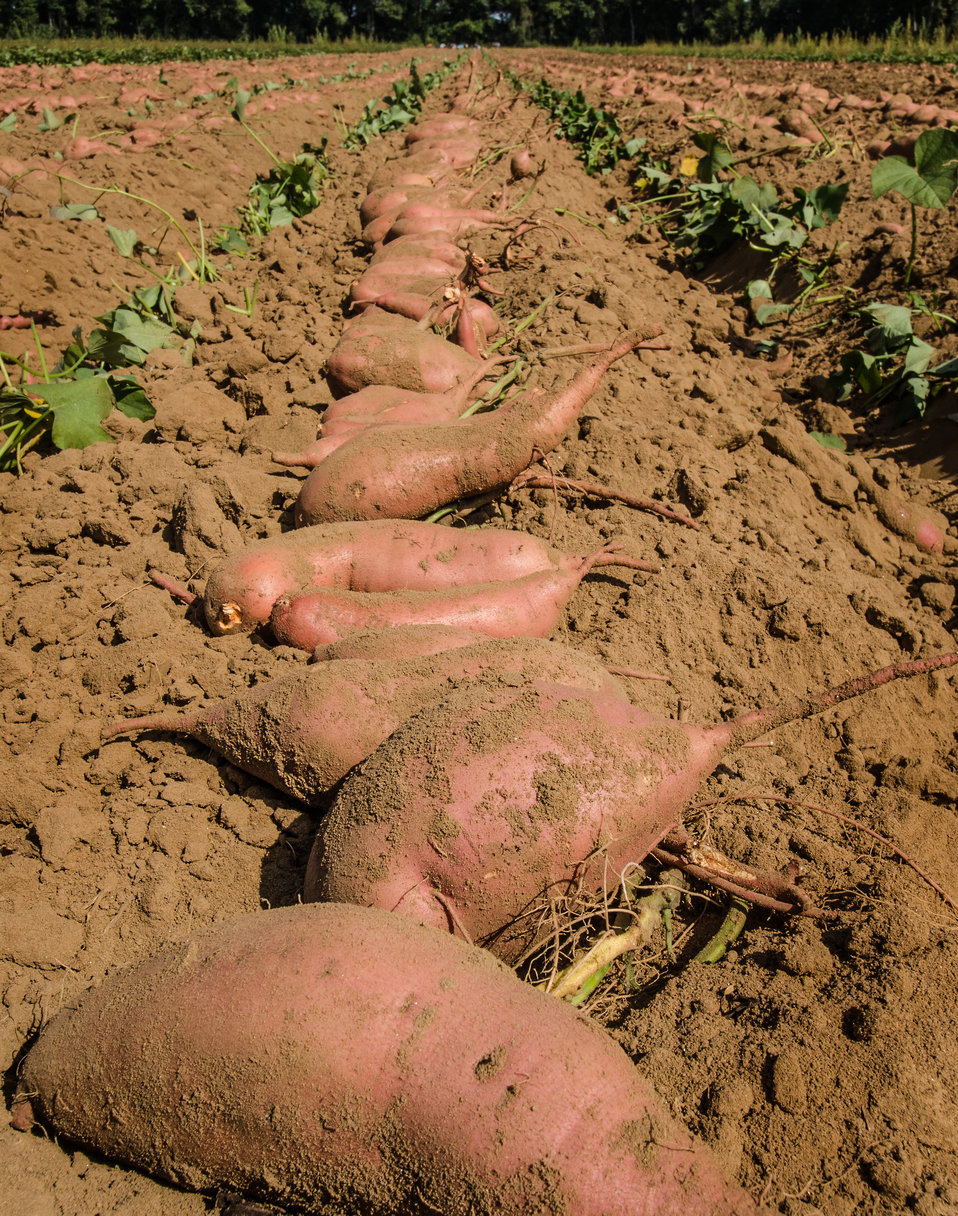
Harvested hand picked large sweet potatoes, at Kirby Farms in Mechanicsville, VA on Friday, Sept. 20, 2013. 200 acres of the farm are devoted to eggplant, spinach, beets, tomato, jalapeno peppers, melons and a variety of greens. Soybeans and small grain are grown on the remaining 300 acres. Using rotational crop practices allows Kirby Farms to double and triple crop yields. Wholesalers, who buy from this farm, sell the produce to major supermarkets in the Mid-Atlantic region, from North Carolina to Maryland. Restaurants in the local area prepare and serve the local bought produce to patrons in the Richmond, VA metropolitan area.